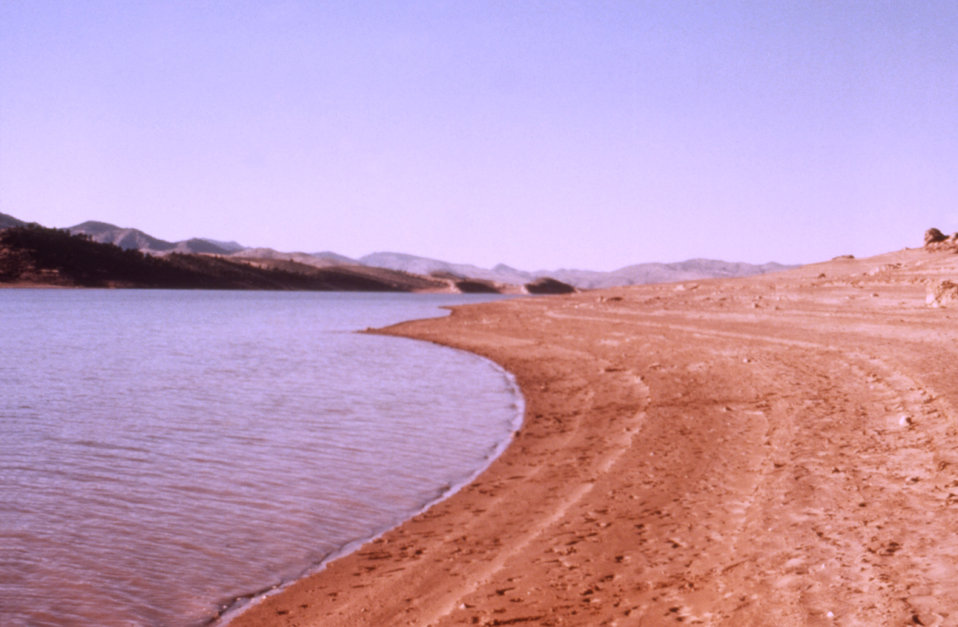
This 1976 photograph shows the red sandstone shoreline of Horsetooth Reservoir in Colorado.